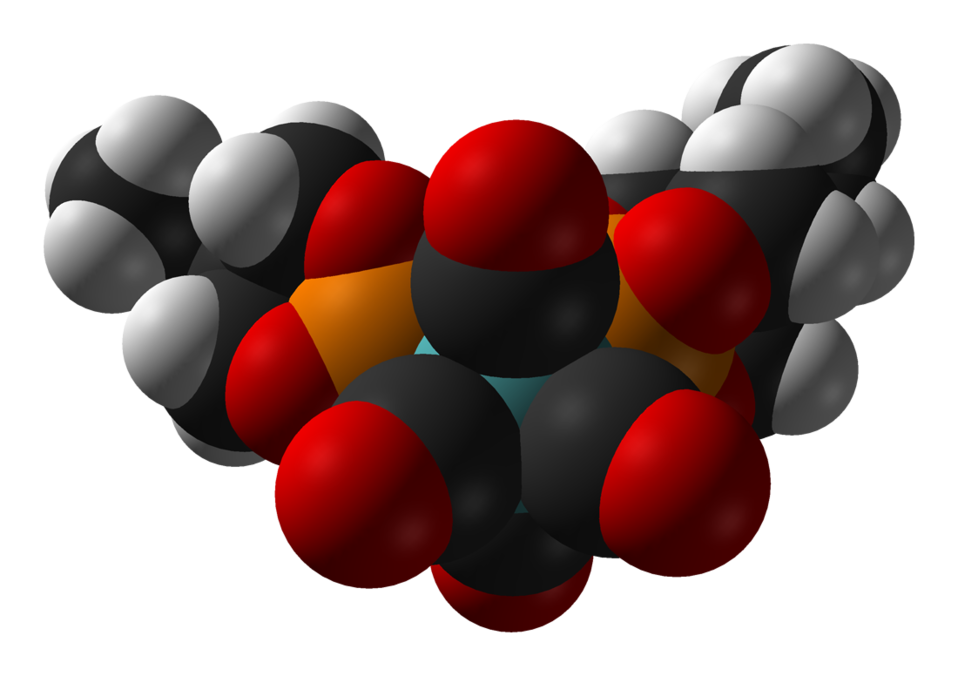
Space-filling model of the caged phosphite complex bis(trimethylolpropane phosphite)molybdenum tetracarbonyl, [(EtCage)2Mo(CO)4], as found in the crystal structure. Colour code: Carbon, C: black Hydrogen, H: white Phosphorus, P: orange Oxygen, O: red Molybdenum, Mo: turquoise Crystal structure by X-ray diffraction from Organometallics (2007) 26, 6832–6838. Model constructed in CrystalMaker 8.1. Image generated in Accelrys DS Visualizer.